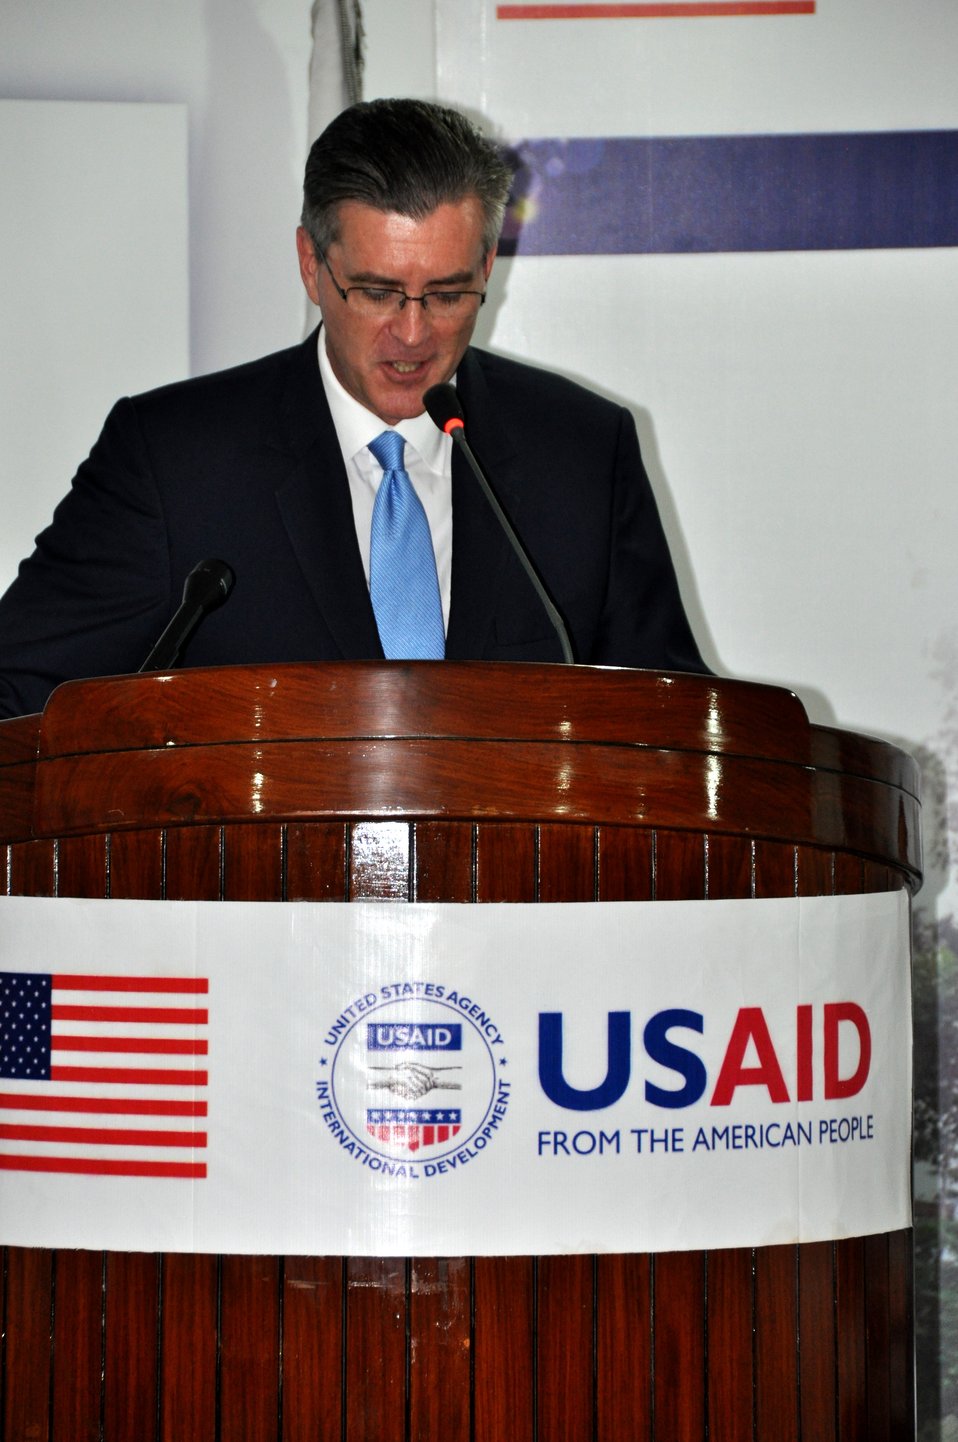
The United States Ambassador to Pakistan, Richard Olson broke ground for a U.S. funded construction of a new Faculty of Education building in Muzaffarabad, AJK. 10